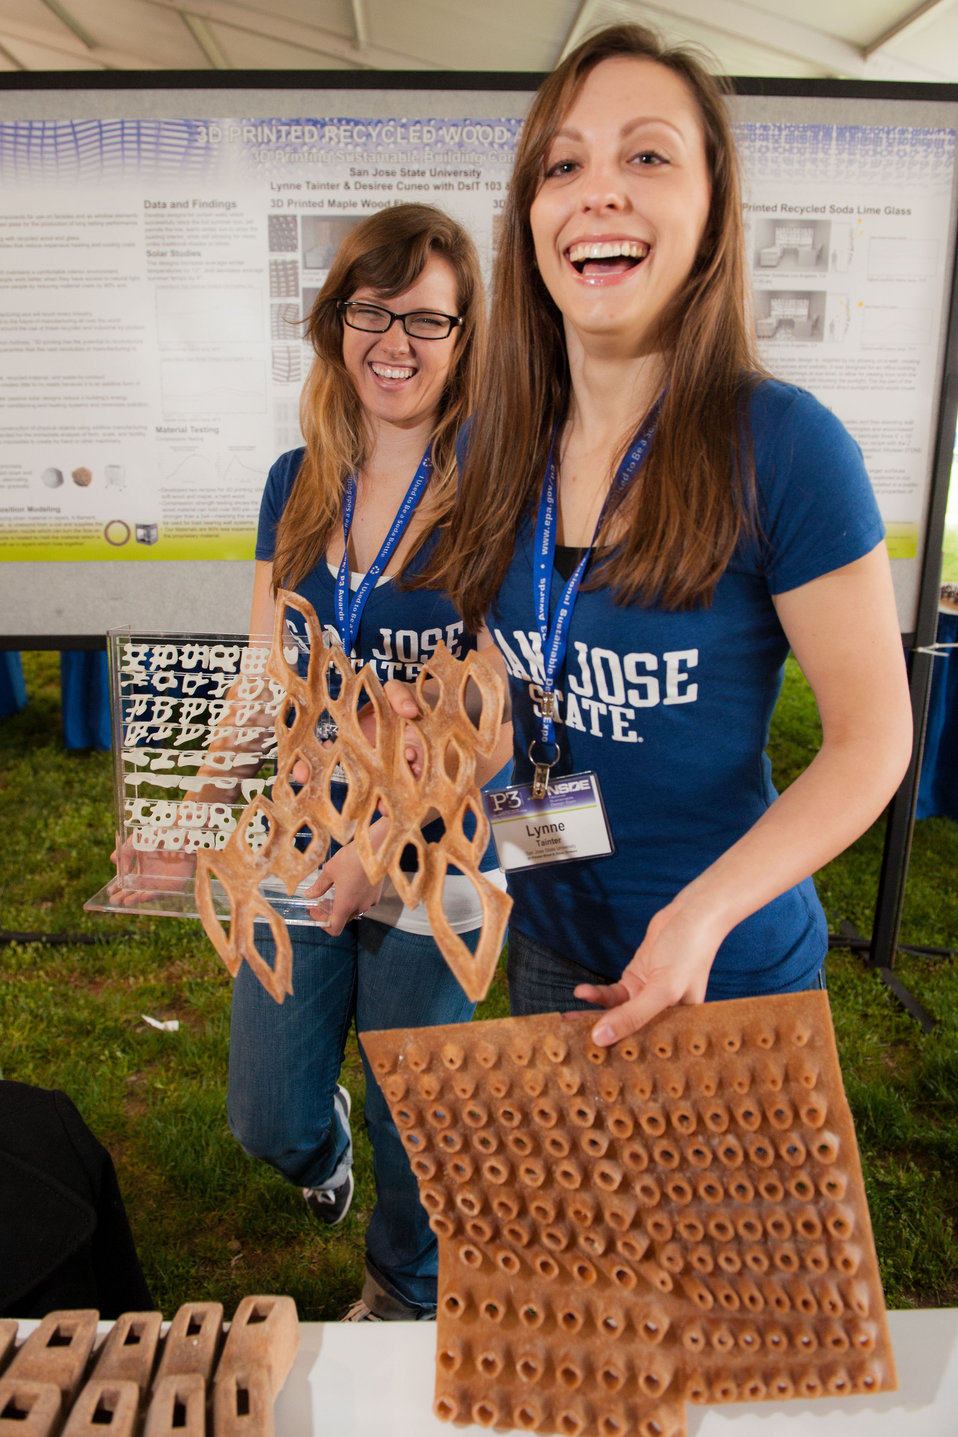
April 18, 2013 - P3 Design Expo,San José State University

San José State University
3D Printed Wood and Glass Screens
3D printing of sustainable building components for facades and as window elements

SJSU P3 page
SJSU Team Blog

People Prosperity and the Planet: National Sustainable Design Expo on the National Mall 18-19 April 2013